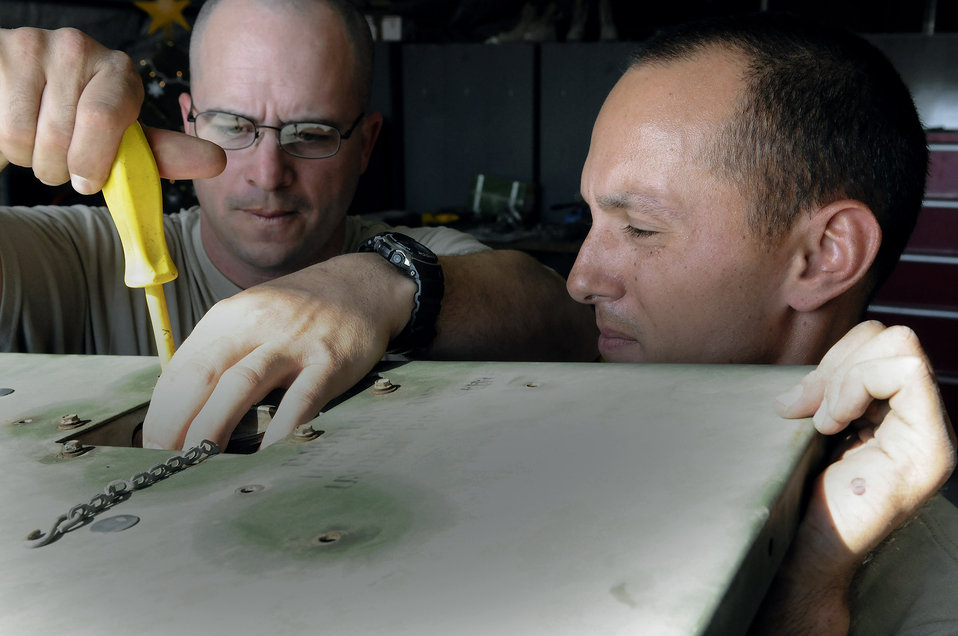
Airmen keep eyes on the sky to protect warfighters

Technical Sgt. Andrew Ferguson tightens a connection while Senior Airman Craig Stawicki holds the top in place Dec. 30, 2008, in Southwest Asia. The maintainers, electrical power plant production technicians assigned to the 71st Expeditionary Air Control Squadron, are responsible for servicing the generators that keep the 71st EACS radars up and running. Sergeant Ferguson is a native of Colt, Ark., and Airman Stawicki hails from Brick, N.J.